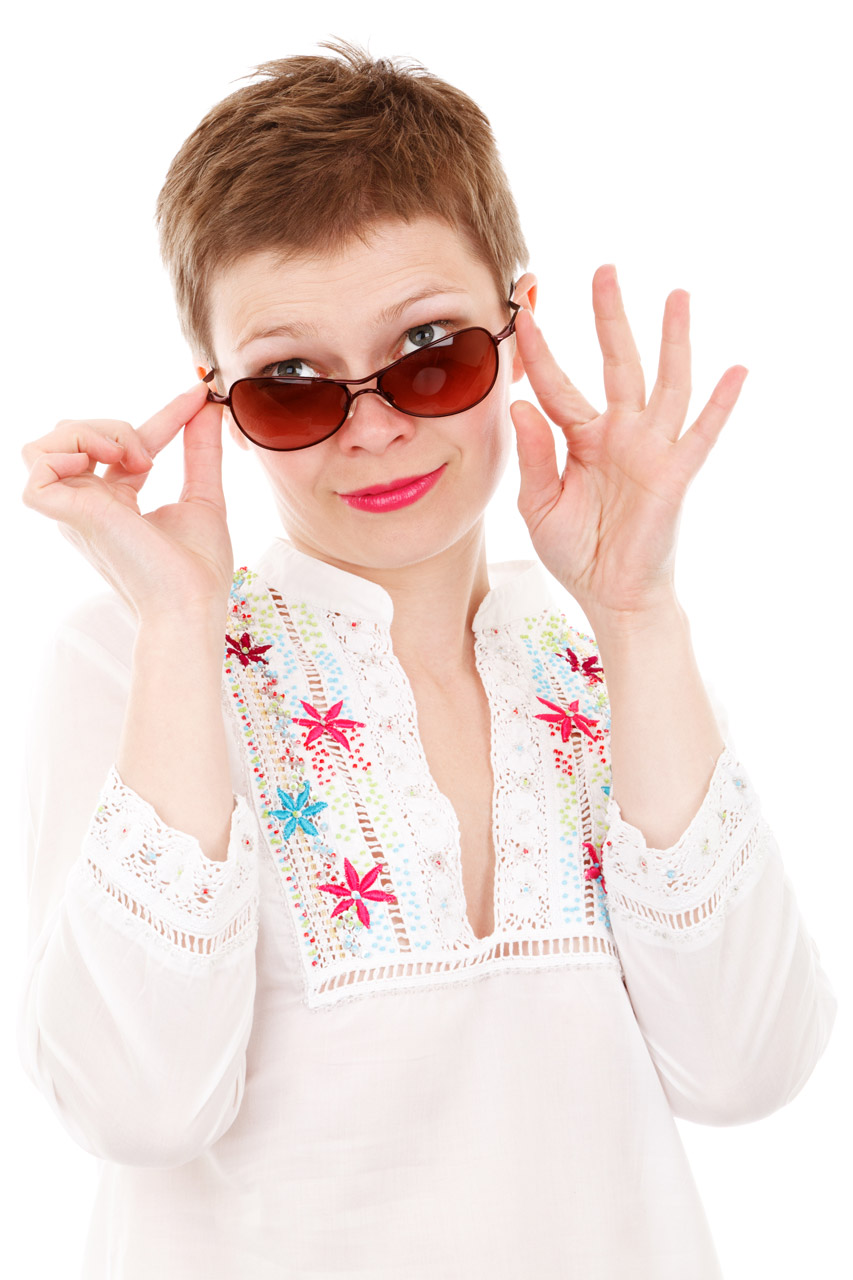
Woman looking up

Young woman looking through sunglasses in summer clothes isolated on white background.